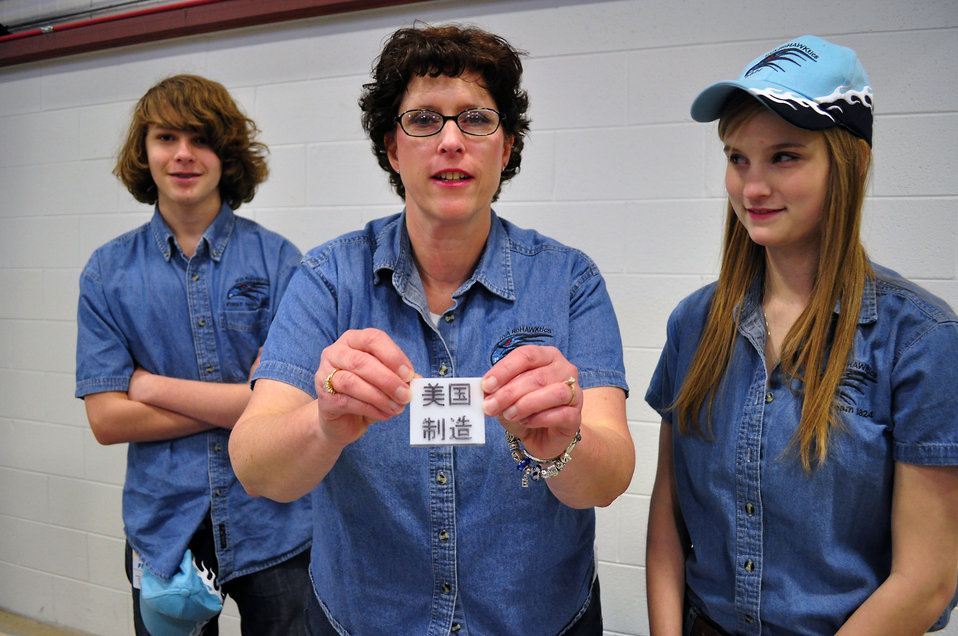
Carbon Fiber Technology Facilty Open House Oak Ridge Tennessee

13-025 DOE photo Lynn Freeny